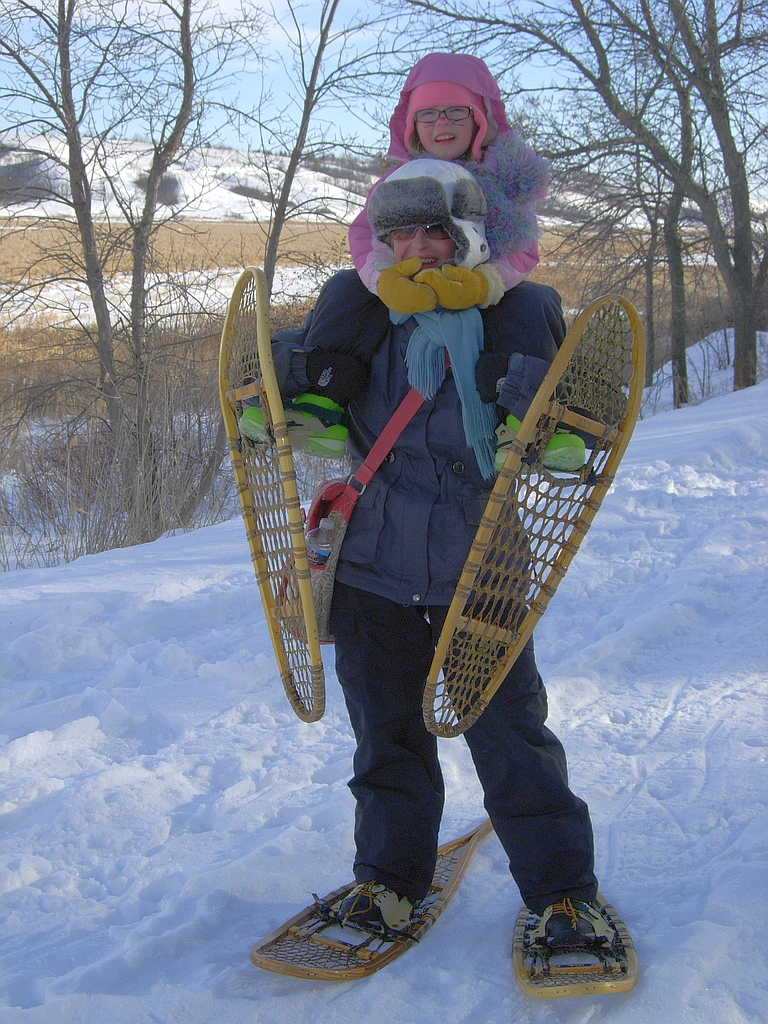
Riding piggyback at Des Lacs Refuge

Haley Standard, 5, catches a ride with her mom, Rebecca Walter-Standard of Kenmare, at Des Lacs National Wildlife Refuge in North Dakota in early 2011.